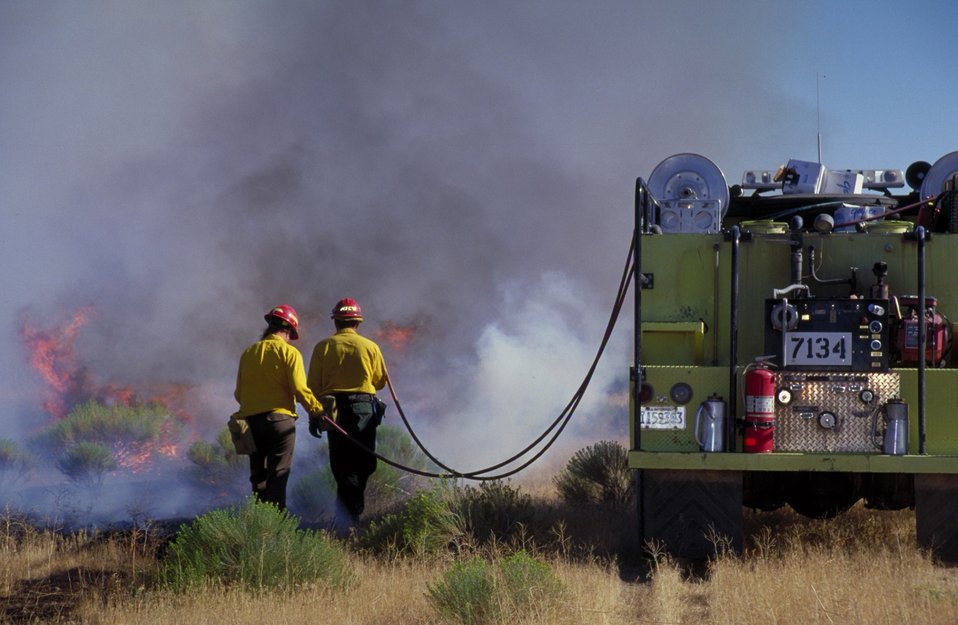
Prescribed brush burning Fire Season 2000 Lower Snake River District LSRD